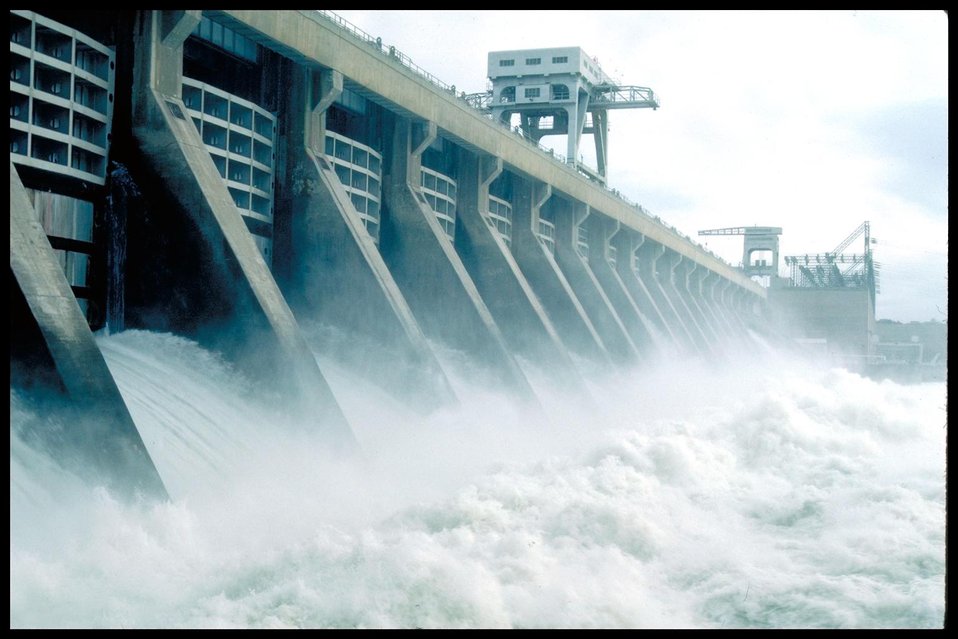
THE MCNARY DAM ON THE LOWER COLUMBIA RIVER, ALONG BORDER OF OREGON AND WASHINGTON.

THE MCNARY DAM IS ONE OF THE FEDERAL DAMS PROVIDING POWER TO THE PACIFIC NORTHWEST. THE BONNEVILLE POWER ADMINISTRATION IS A FEDERAL AGENCY THAT MARKETS AND DELIVERS MORE THAN HALF THE PACIFIC NORTHWEST'S ELECTRICITY AND MAINTAINS A NETWORK OF MORE THAN 12,300 MILES OF TRANSMISSION LINES.